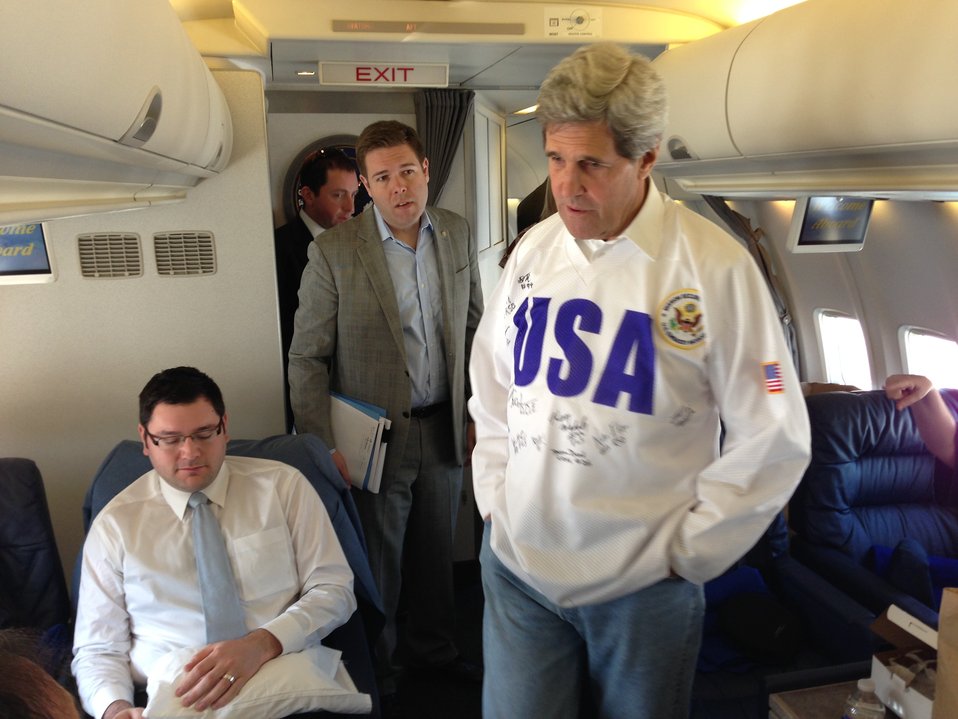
Secretary Kerry En Route to Rome

U.S. Secretary of State John Kerry, aboard a U.S. Air Force jet en route to Rome, models a hockey jersey given to him on May 8, 2013, by the Embassy Moscow amateur hockey team.